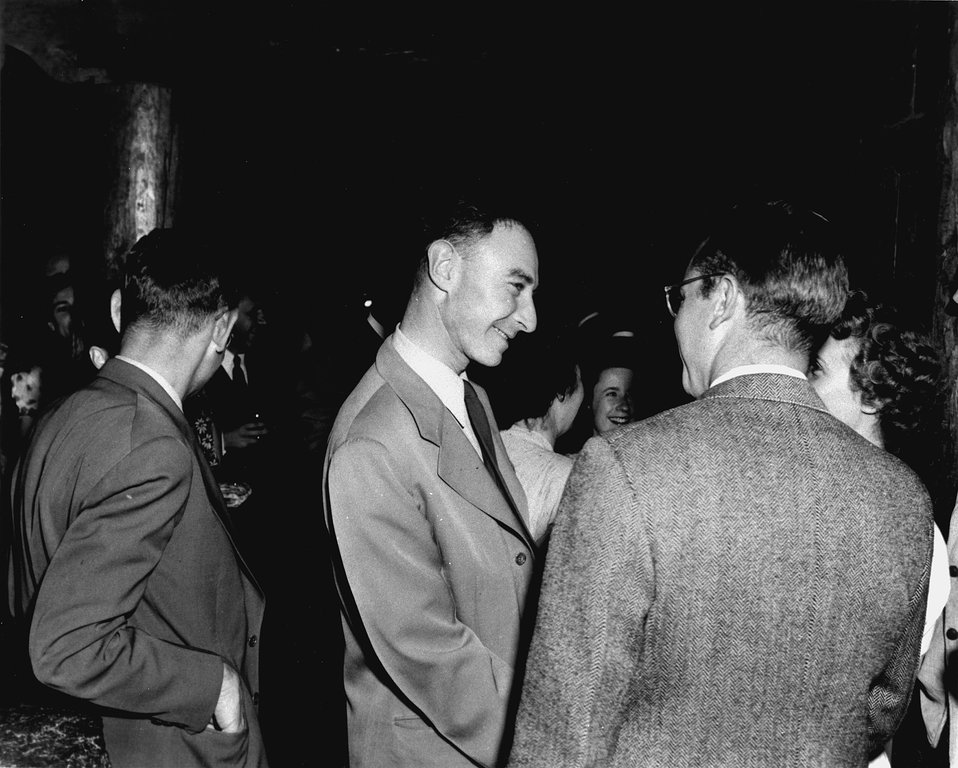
J. Robert Oppenheimer at Los Alamos. c. 1945